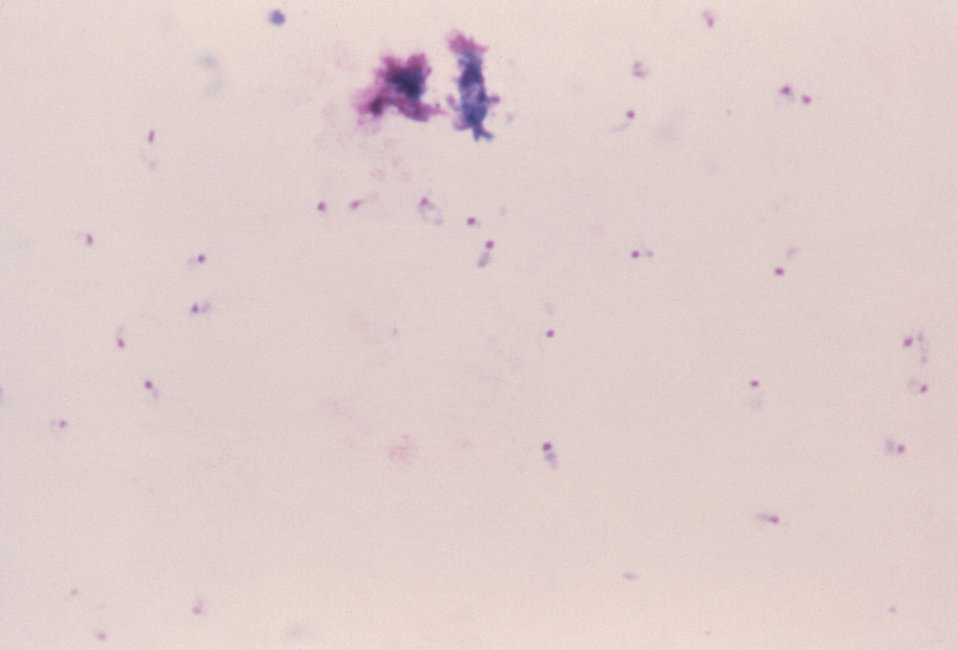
This thick blood smear photomicrograph reveals a comma-shaped Plasmodium falciparum parasite.